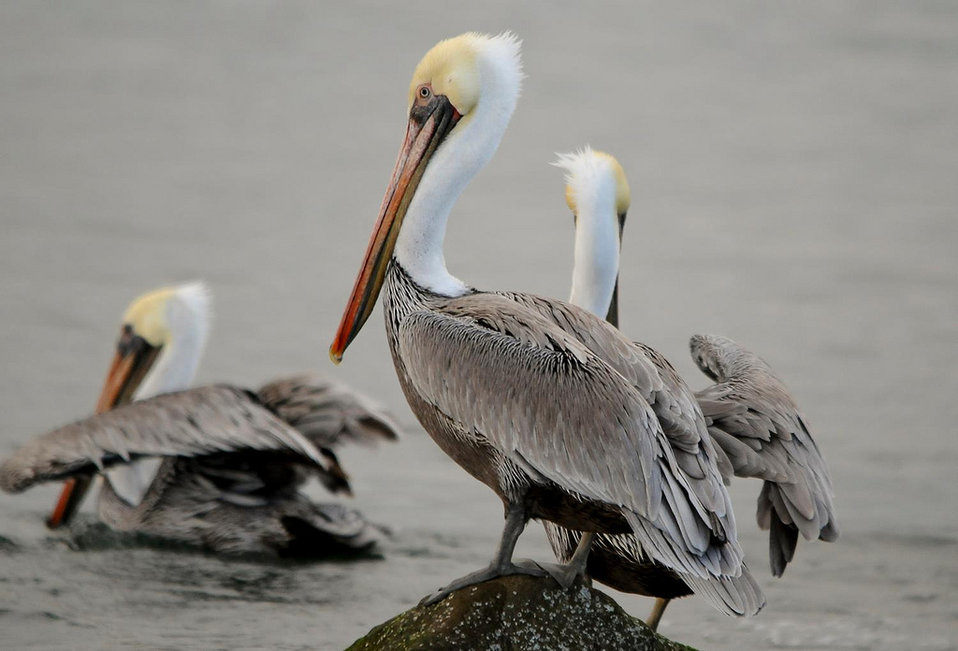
November

pelicans overwintering
Oregon Coast National Wildlife Refuge Complex, OR